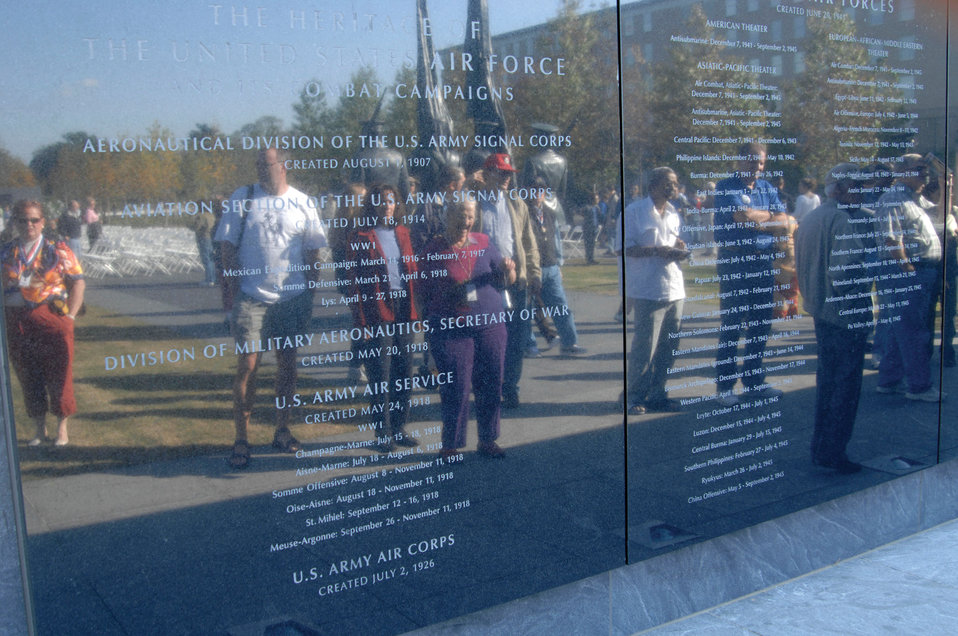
Airmen of Note at AF Memorial

After listening to the Air Force Band's Airmen of Note perform Oct. 21, visitors at the Air Force Memorial read some of the inscriptions on the walls surrounding the Air Force Memorial in Arlington, Va.